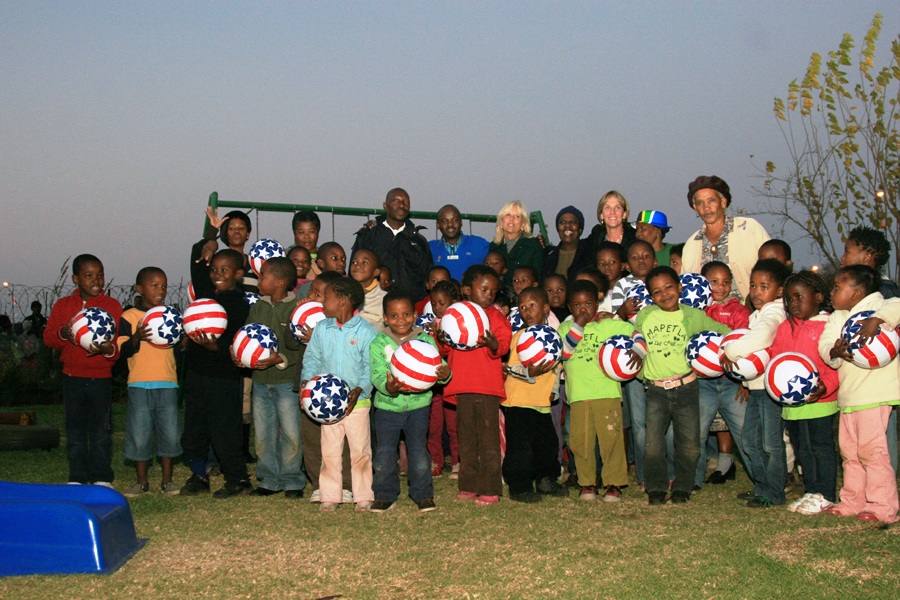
Dr. Jill Biden and Liz Berry Gips With Mapetla Staff and Children

Dr. Jill Biden, wife of Vice President Joseph Biden, and Liz Berry Gips, wife of U.S. Ambassador to the South Africa Donald H. Gips, pose for a photo with South African children and Mapetla Day Care staff during their visit to the Mapetla Day Care Centre in Soweto, Johannesburg, South Africa, on June 10, 2010.